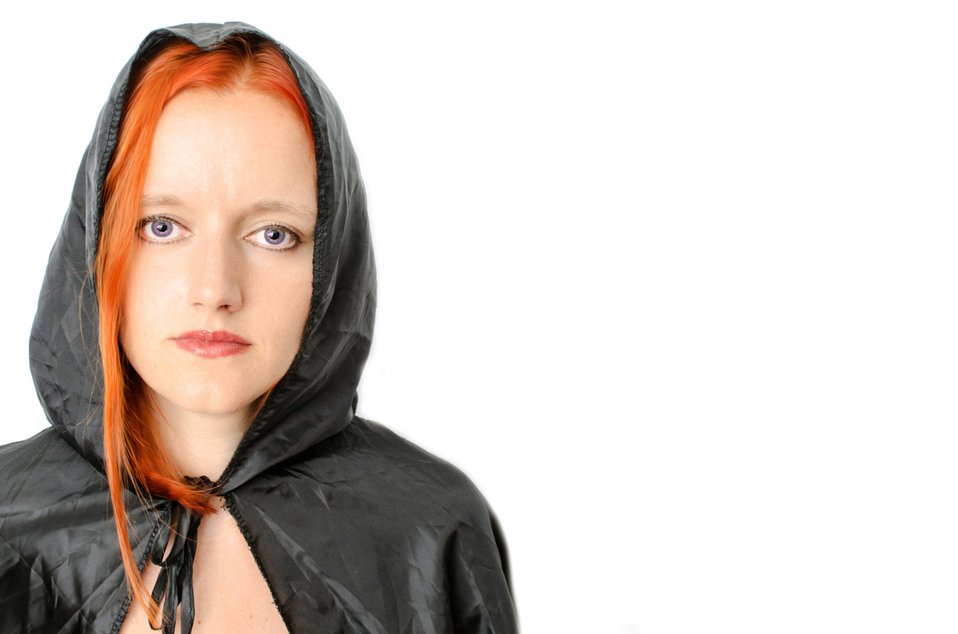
Woman and hood isolated on white.